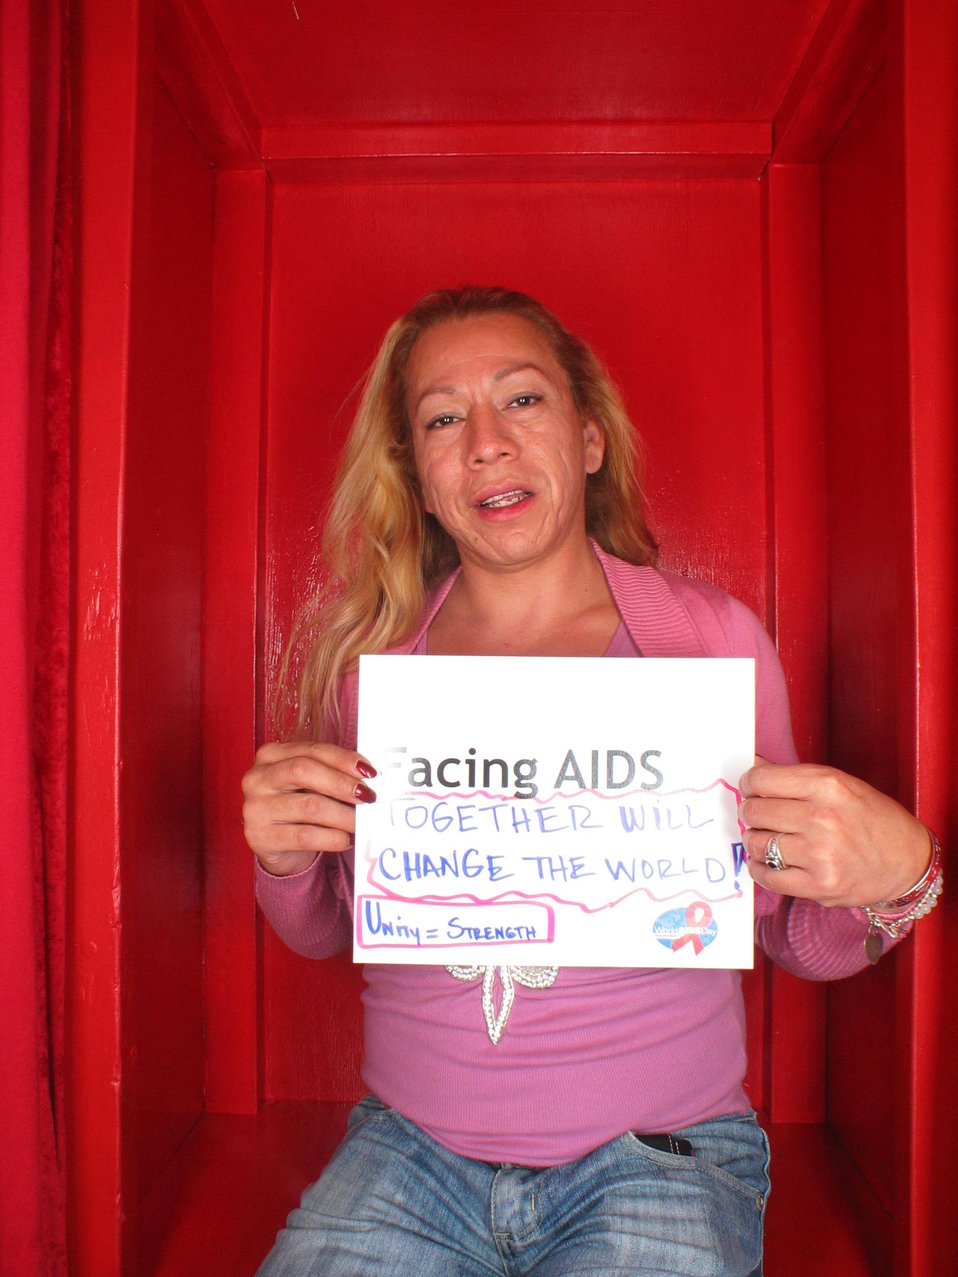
Facing AIDS together to change the world.